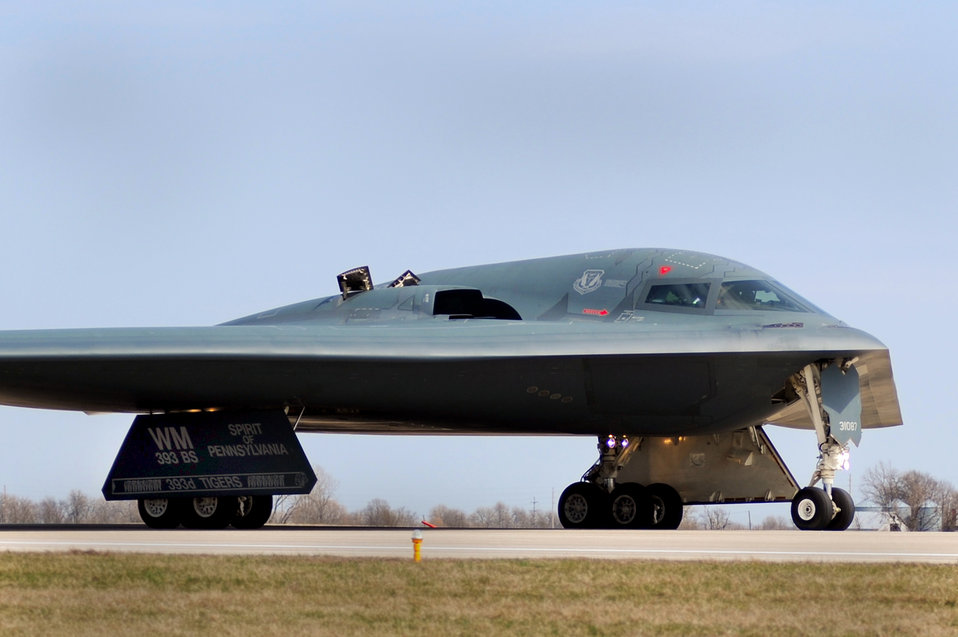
B-2 crews prepare for mission

A B-2 Spirit returns to Whiteman Air Force Base, Mo., March 20, 2011, after a mission.